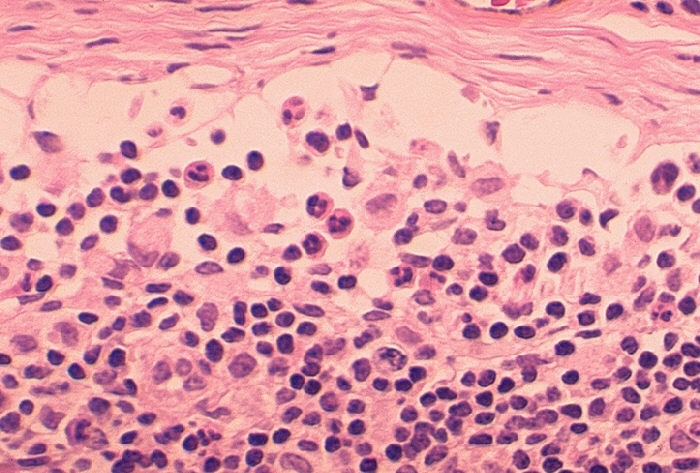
Histopathology of lymphadenopathy due to infection by HIV-1. Subcapsular sinus.